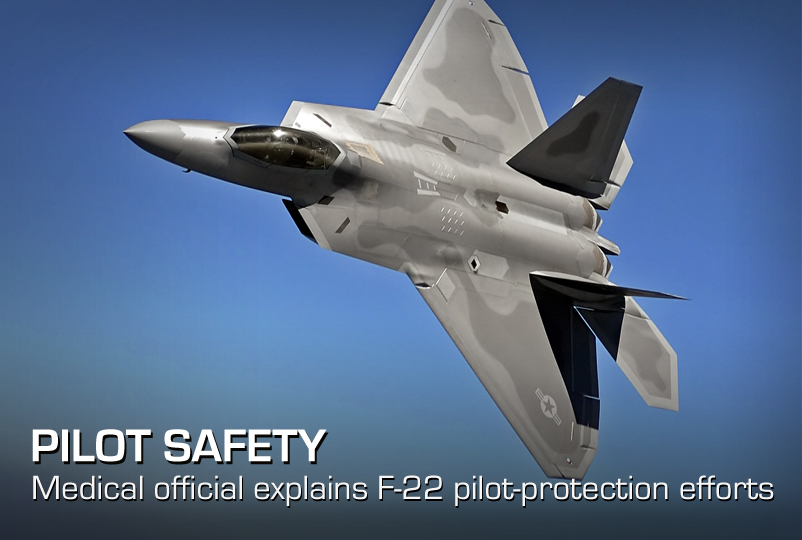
Pilot Safety